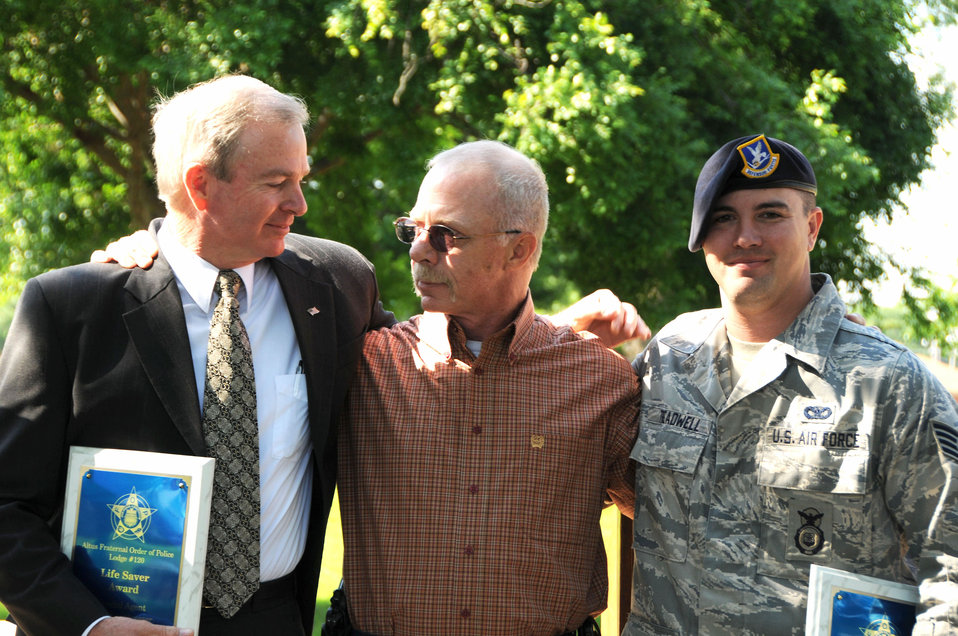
Airmen honored for heroic life-saving efforts

Special Agent Ross Bergstresser (left), Air Force Office of Special Investigations, and Staff Sgt. Matt Treadwell (right), 97th Security Forces Squadron, hug Deputy Kevin Walker at a ceremony May 22 in Altus, Okla. Deputy Walker had a heart attack May 14 at the firing range during a competition between Altus Police Department, Altus AFB Security Forces and OSI. These two heroes saved Deputy Walker's life, and kept him alive until emergency medical attention arrived earning the Fraternal Order of Police Life Saver Award.